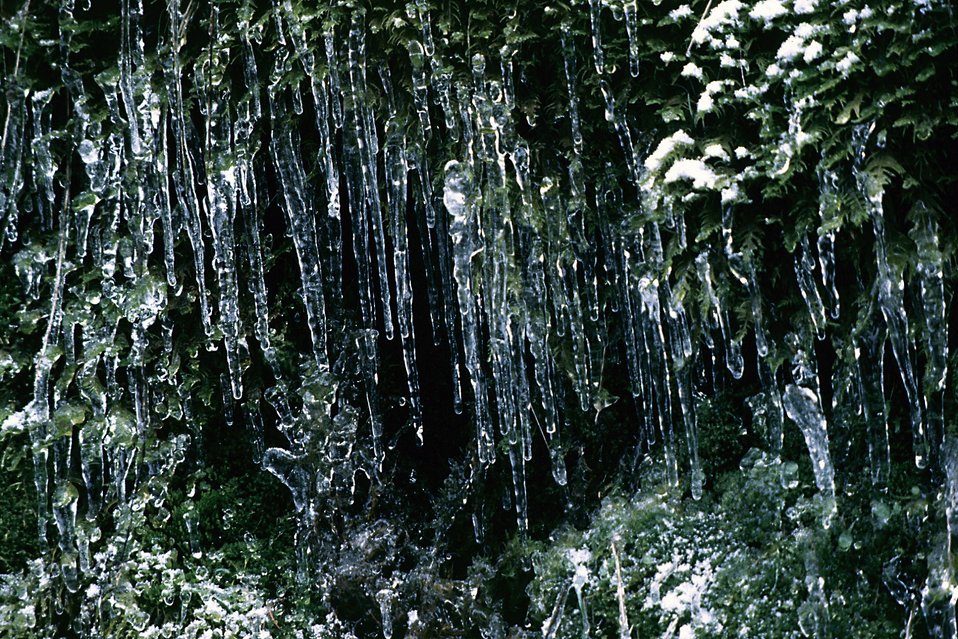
Mid Winter forest scene in the Mollala Corridor.